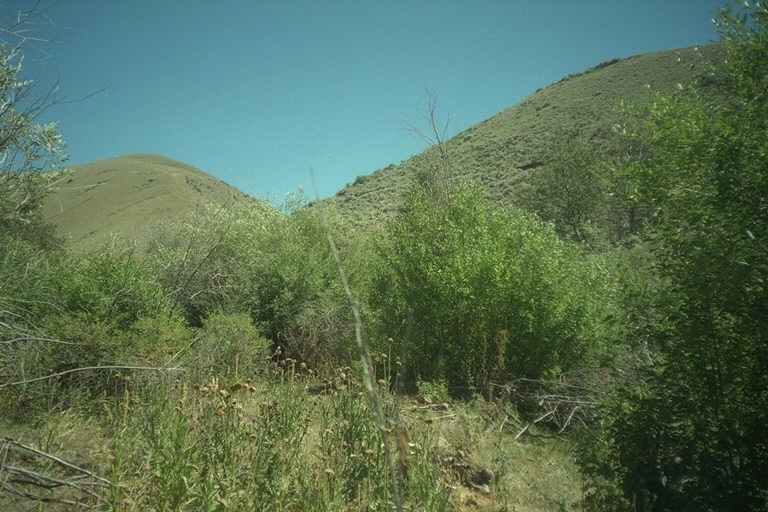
Riparian area Public Lands Salmon Field Office UCSC Upper Columbia Salmon Clearwater District